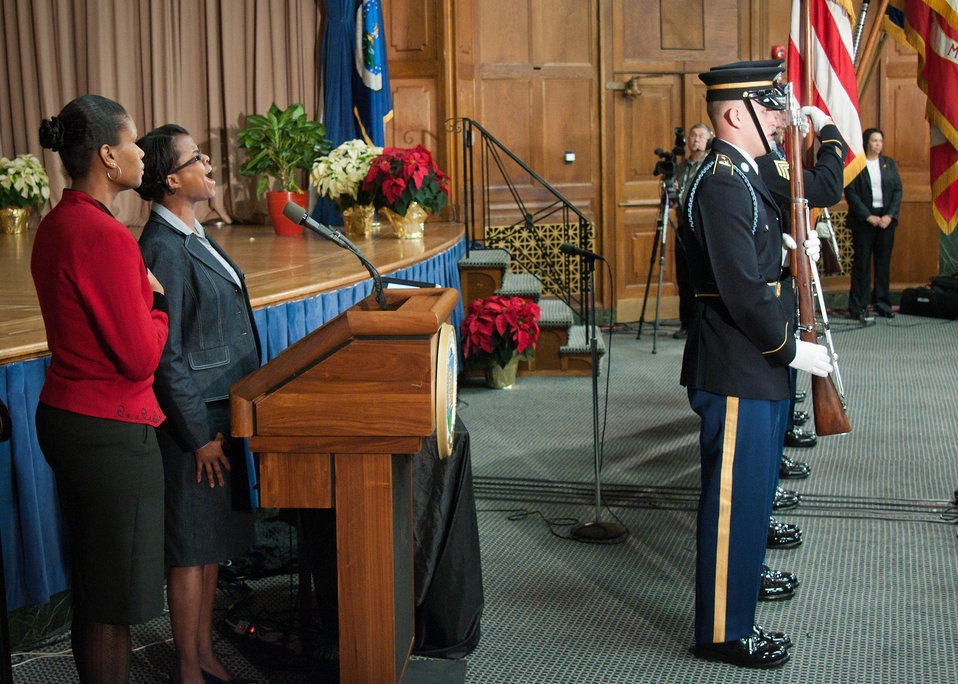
Agriculture Office of Communications Mistress of Ceremony Susan Carter listens to U.S. Department of Agriculture (USDA) Assistant Secretary for Civil Rights Human Resources Specialist Donna Carter’s rendition of the National Anthem during the Presentation of Colors at USDA’s Fourth Annual Cultural Transformation event held in Washington, D.C. on Tuesday, Dec. 4, 2012.